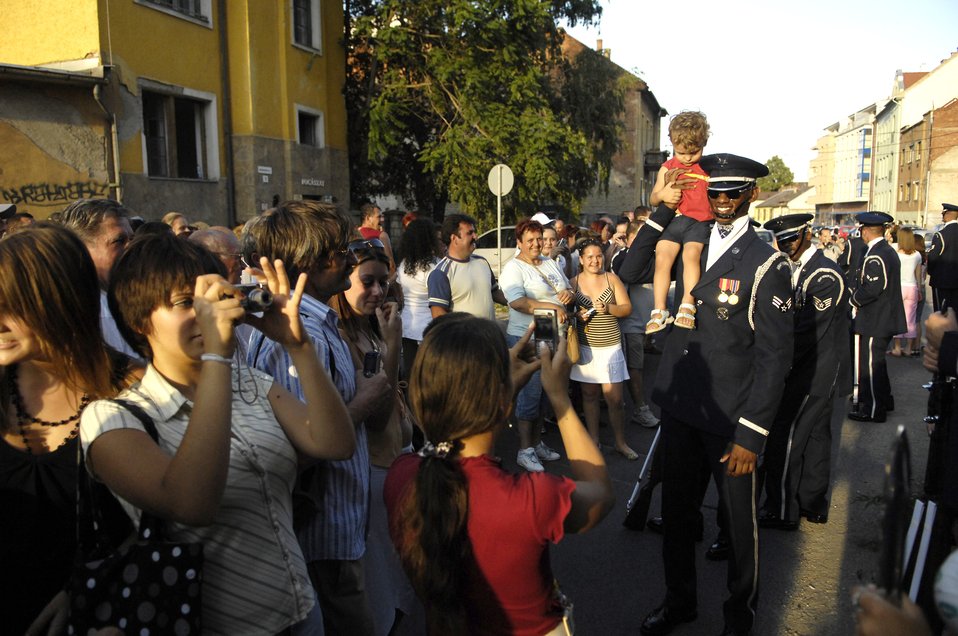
Air Force precision in Hungary

Senior Airman Jermaine James, a member of the U.S. Air Force Honor Guard Drill Team, lets a Hungarian child sit on his shoulder as parents take a picture in Miskolc City, Hungary, July 28. The drill team, the traveling component of the Air Force Honor Guard, is visiting three countries across central Europe.